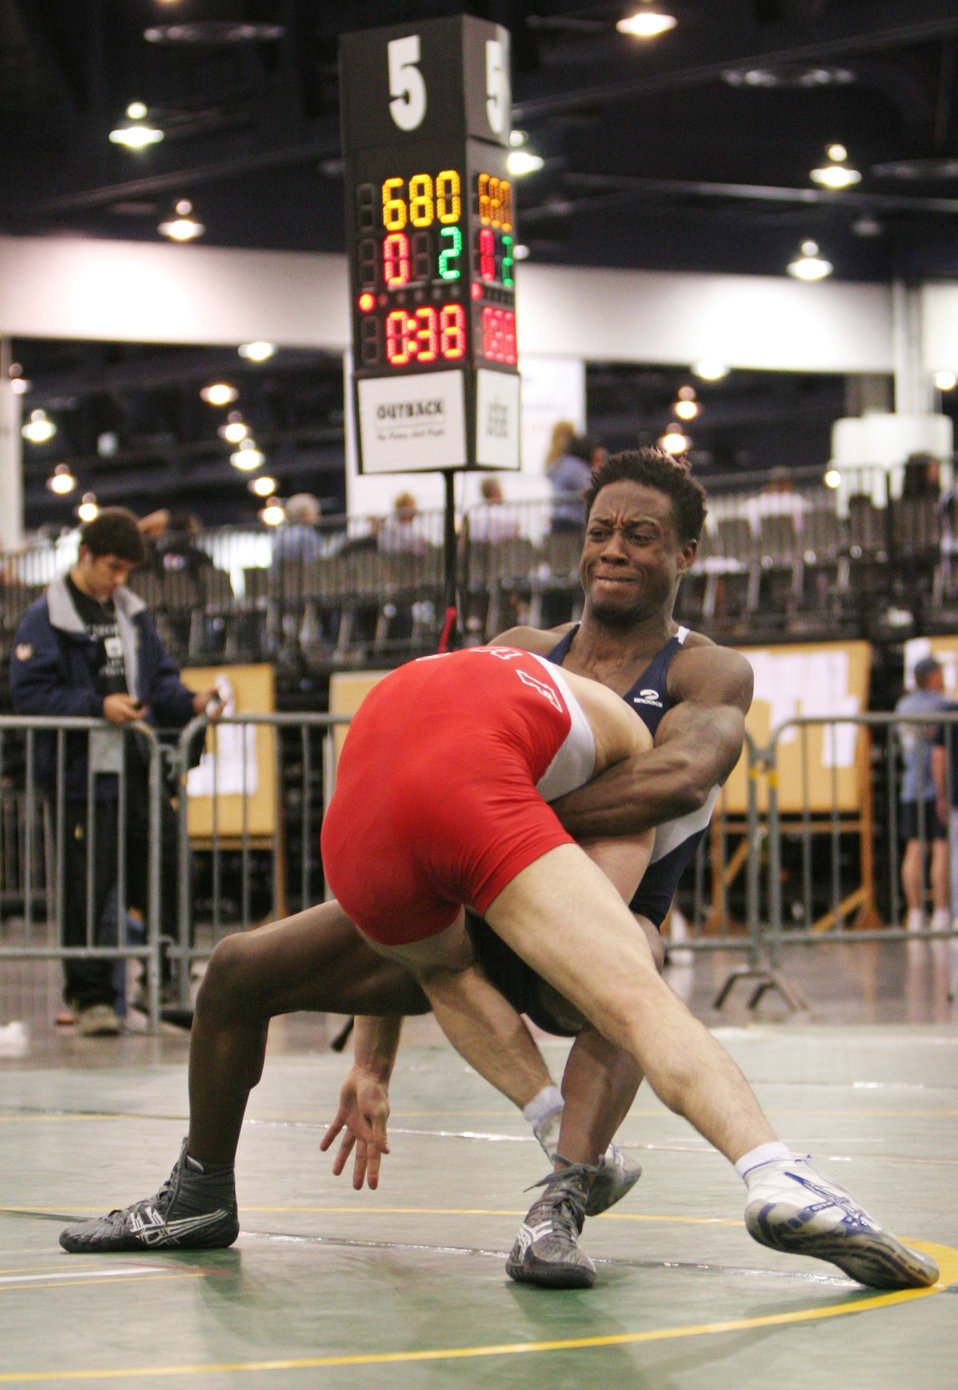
Air Force wrestlers compete in Las Vegas tourney

Capt. Anthony Brooker attempts a lift and toss on his opponent and fellow teammate Senior Airman Jared Moreland at the USA National Senior Men's and Women's Wrestling Championships in Las Vegas on Saturday, April 15, 2006. Captain Brooker went on to win the match and finish seventh overall. He is stationed at Vandenberg Air Force Base, Calif., and Airman Moreland is at Cannon AFB, N.M.